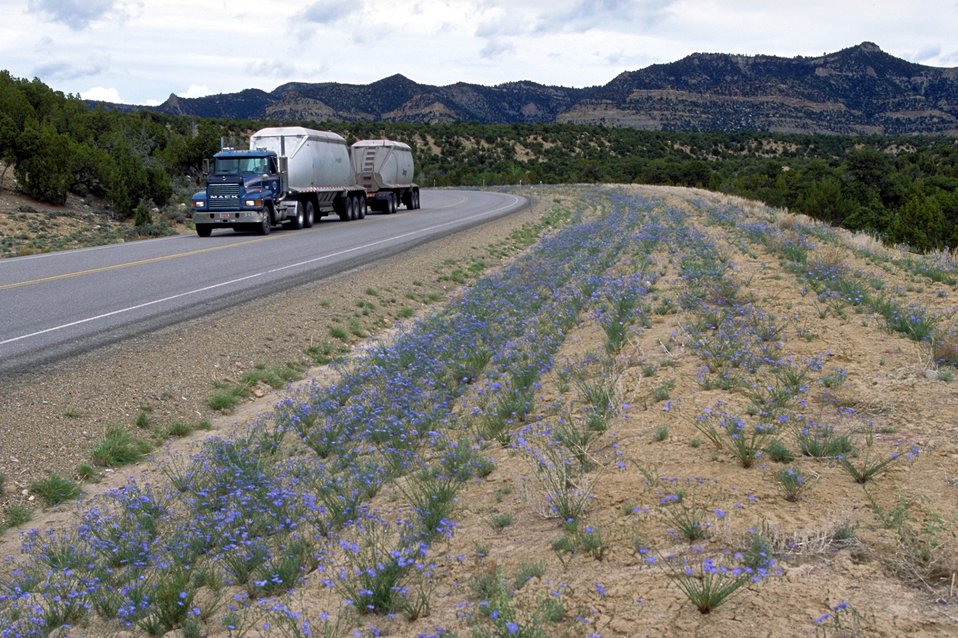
Coal production near Price, Utah.